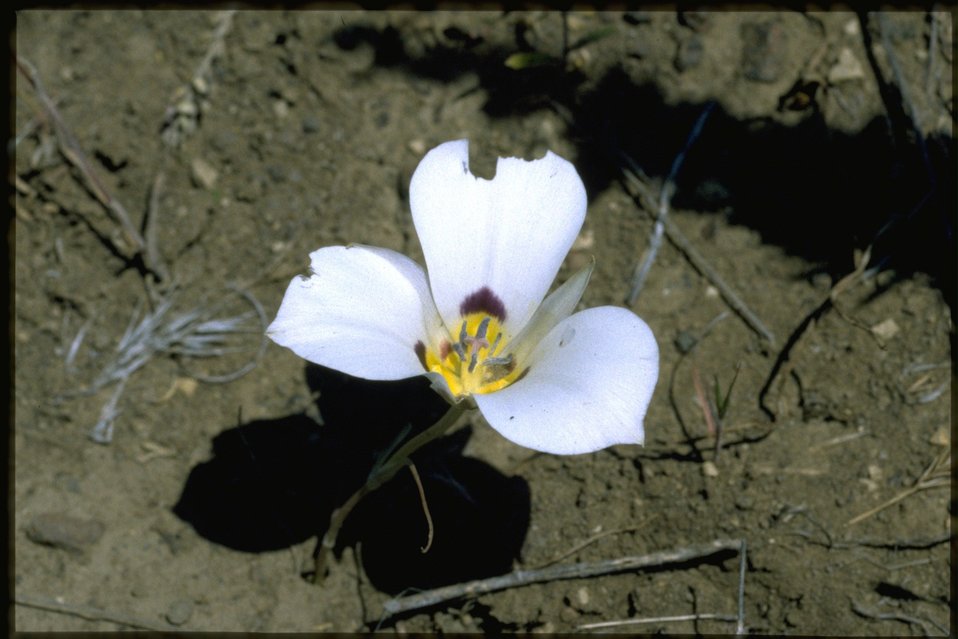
Medium shot of Calochortas.